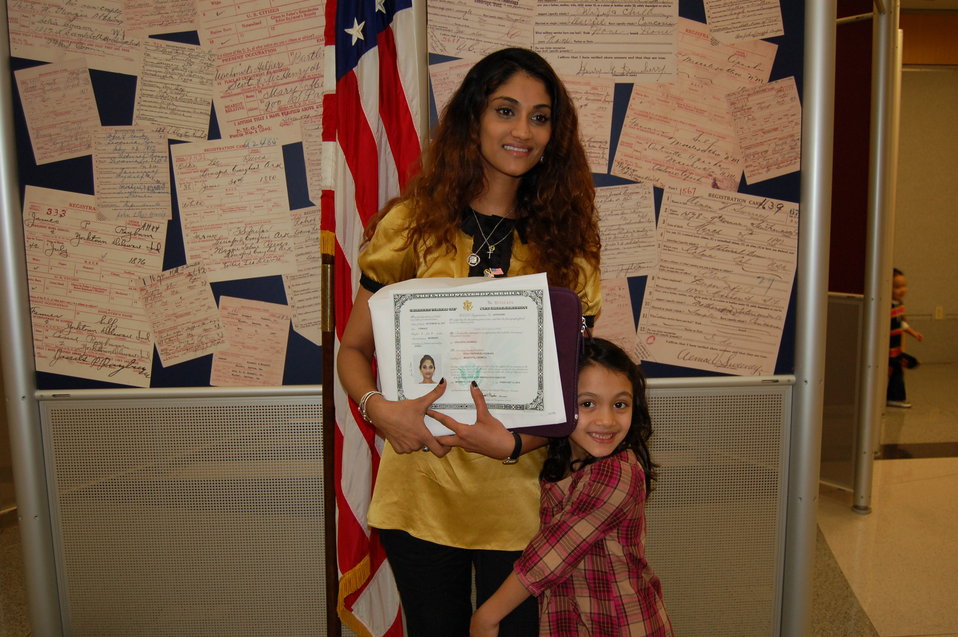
New Citizens